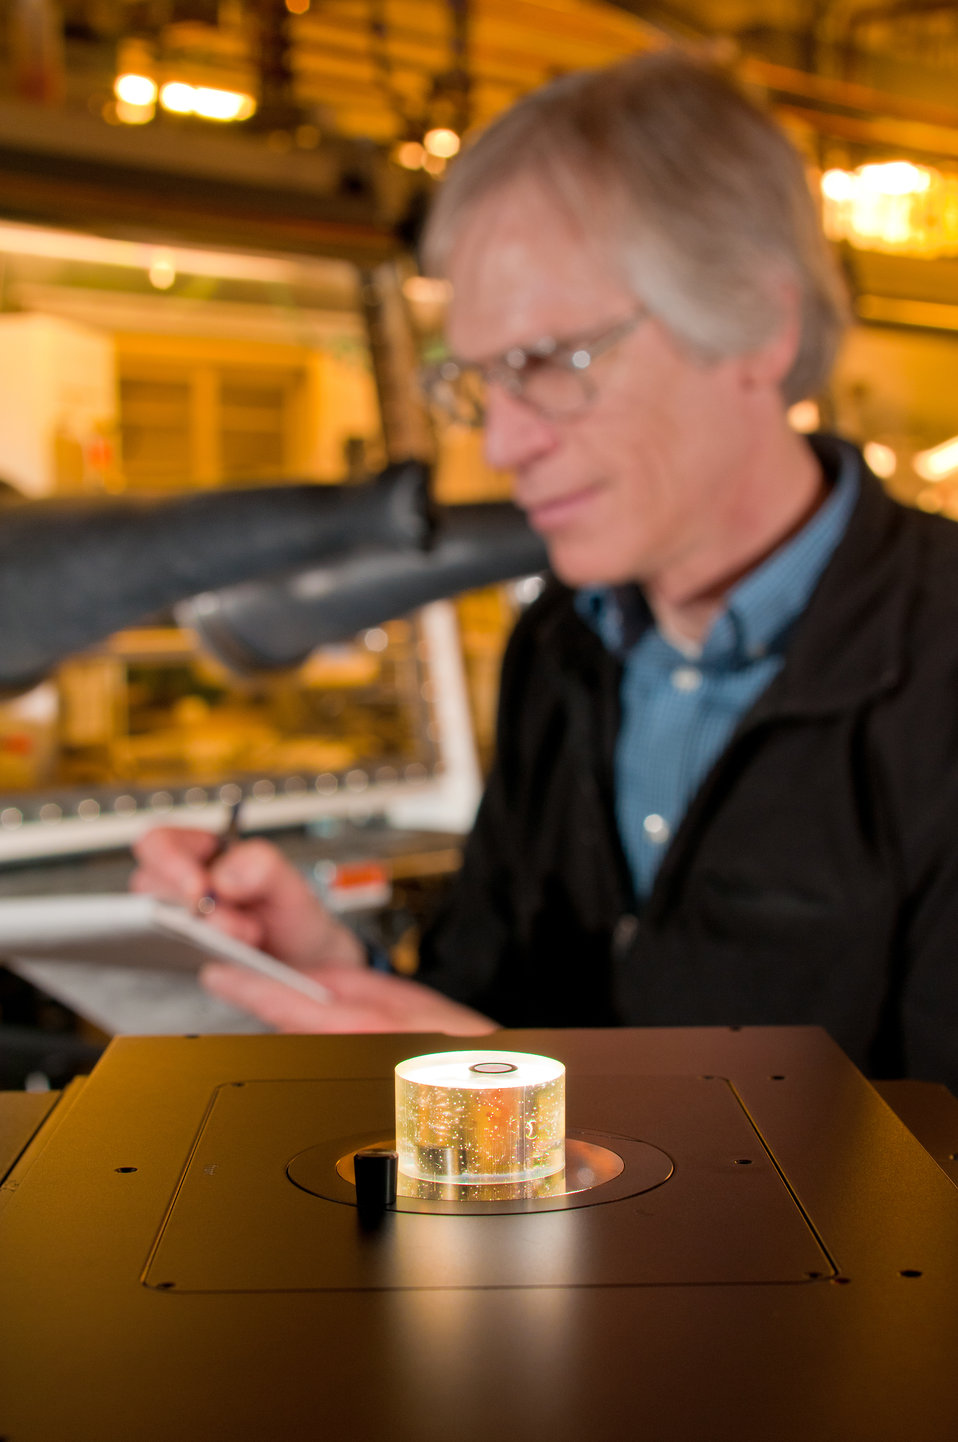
Scientists examines a metallographic sample using an optical microscope to determine its microstructure in the Argonne National Laboratory's Post-Test Facility

The facility allows the laboratory's renowned researchers to dissect, harvest and analyze battery materials from used and previously tested battery cells in order to identify for developers and manufacturers the exact mechanisms that limit the life of their battery cells. This is preformed in one glove box. It keeps the air-sensitive battery materials pristine and intact, yielding more information about what's really going on in the later stages of characterization and analysis.